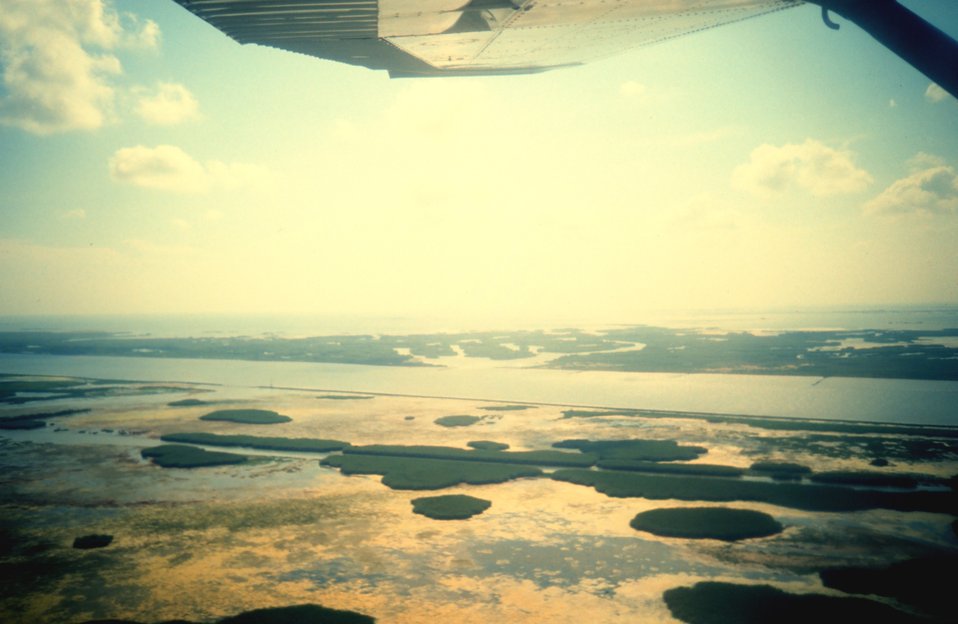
Aerial view of Mississippi Delta wetlands adjacent to Pass a Loutre